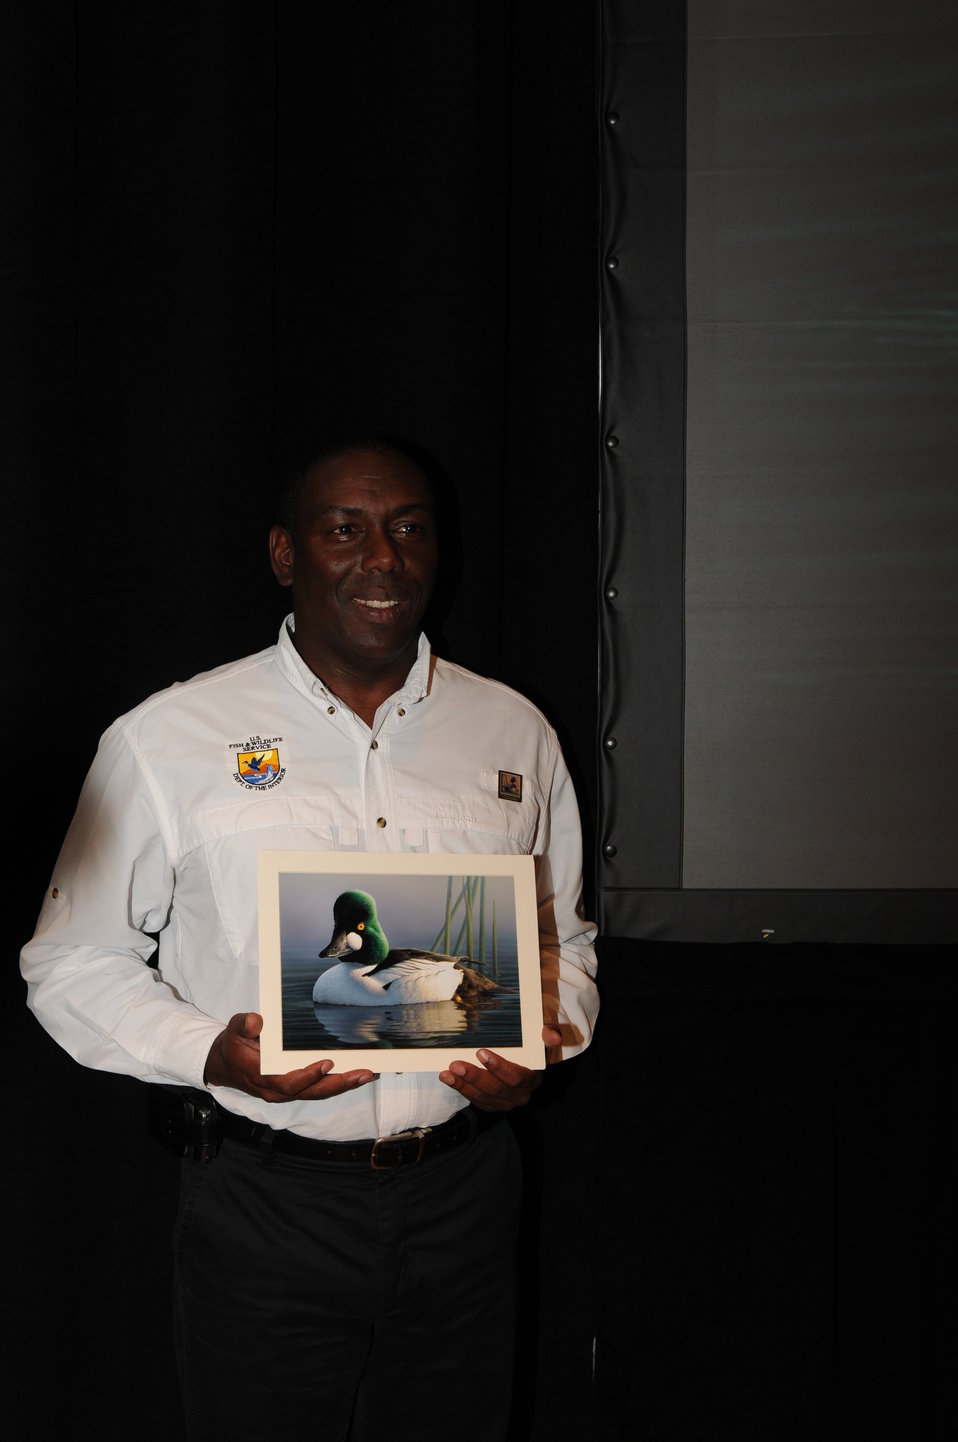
Everyone Loves a Winner

The U.S. Fish & Wildlife Service sponsored the 2012 Federal Duck Stamp Art Contest September 28 and 29 in Ogden, Utah, at Weber State University. A panel of five judges was responsible for choosing the art work used to design the 2013-2014 Migratory Bird Hunting and Conservation Stamp.